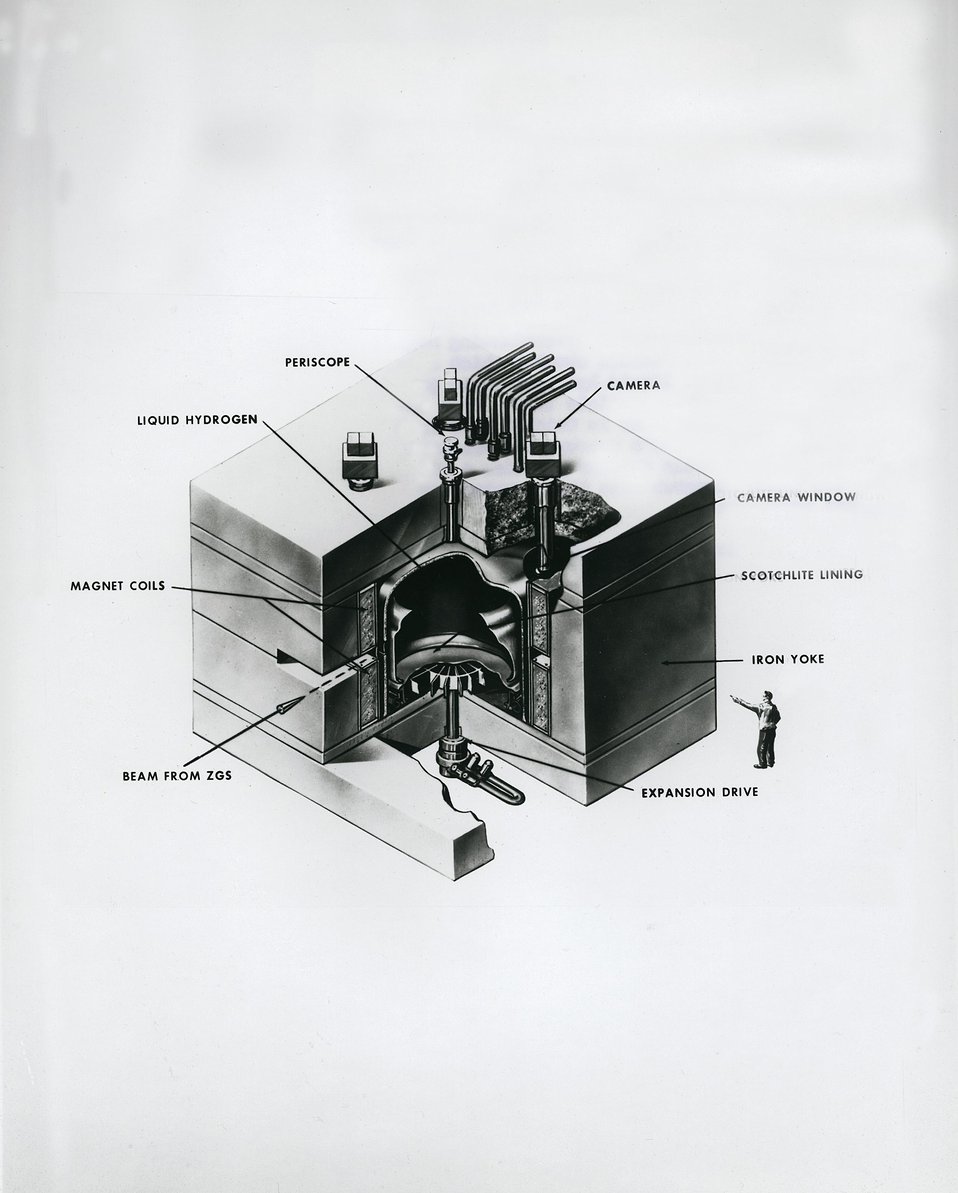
The world's largest superconducting magnet was rated by the Industrial Research magazine as among the top 100 most significant technical developments of 1969.